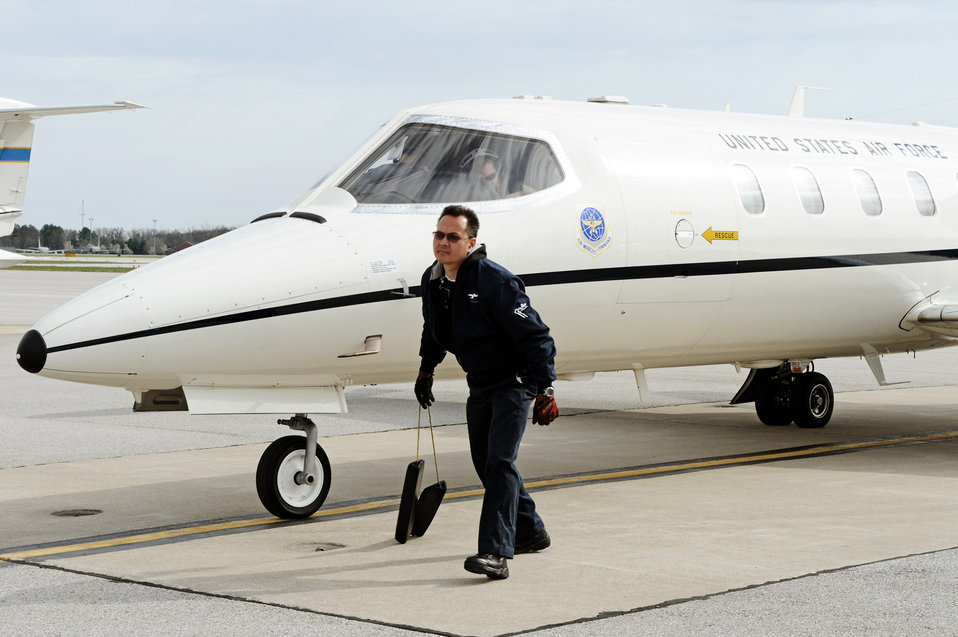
458th AS takes over C-21 training mission

Steve Edwards, a DynCorp International contractor, pulls the chalks from a C-21A prior to takeoff April 6, 2011, at Scott Air Force Base, Ill.